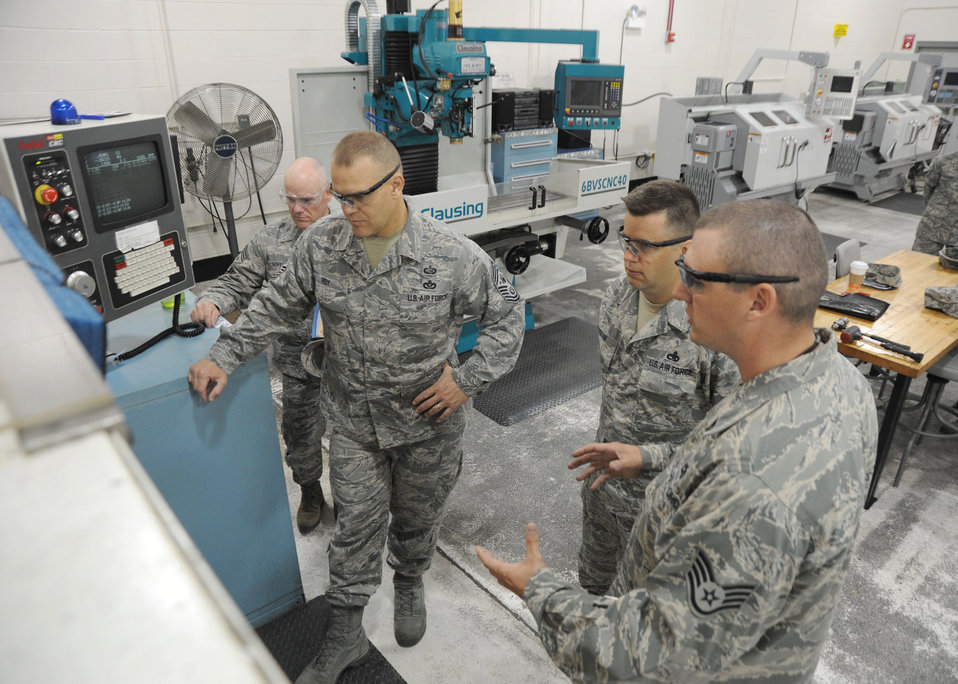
Air Force's top enlisted leader visits NASIC Airmen

Chief Master Sgt. of the Air Force James A. Roy watches as Staff Sgt. Michael Foster demonstrates the part fabrication capabilities of the 445th Airlift Wing June 11, 2010, at Wright-Patterson Air Force Base, Ohio.